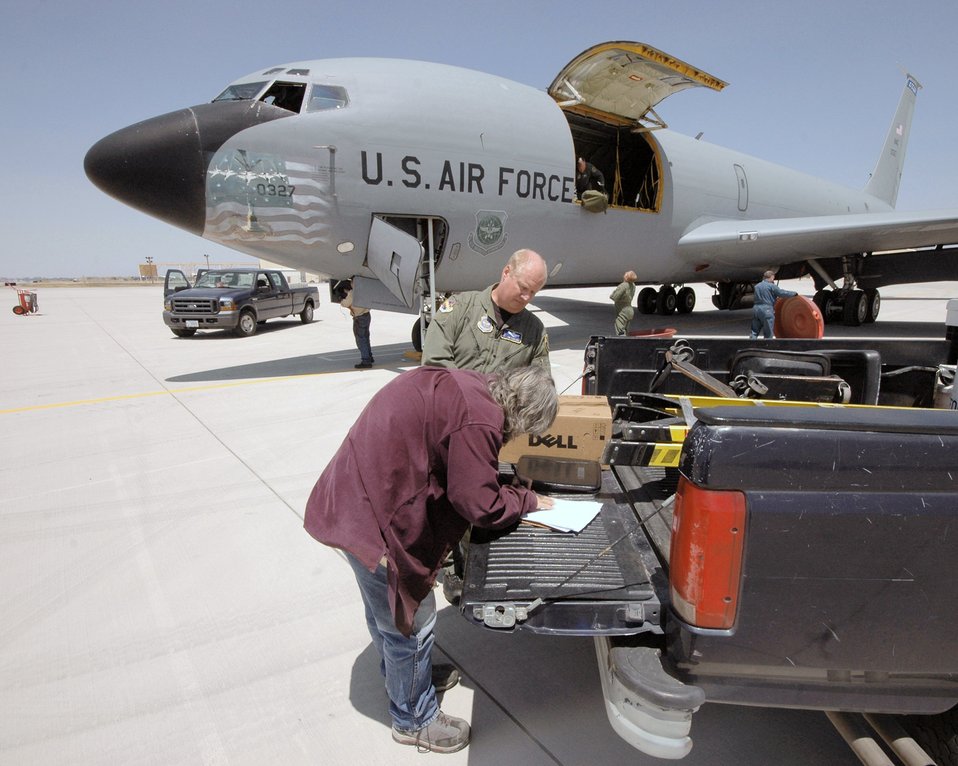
48-year-old KC-135 retires

A KC-135 E model Stratotanker, tail number 0327, is received by 309th Aerospace Maintenance and Regeneration Group members April 24 at Davis-Monthan Air Force Base, Ariz. The 48-year-old aircraft was delivered for long term storage at the 2,600 acre facility after serving with the 151st Air Refueling Wing of the Utah Air National Guard for more than 20 years.